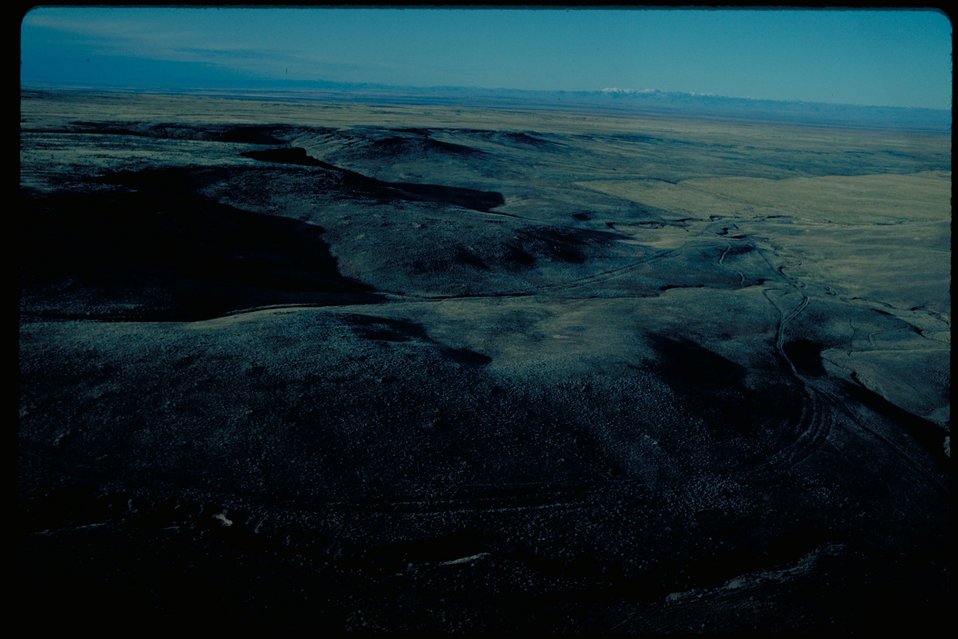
Oregon Trail near Blacks Creek Lower Snake River District